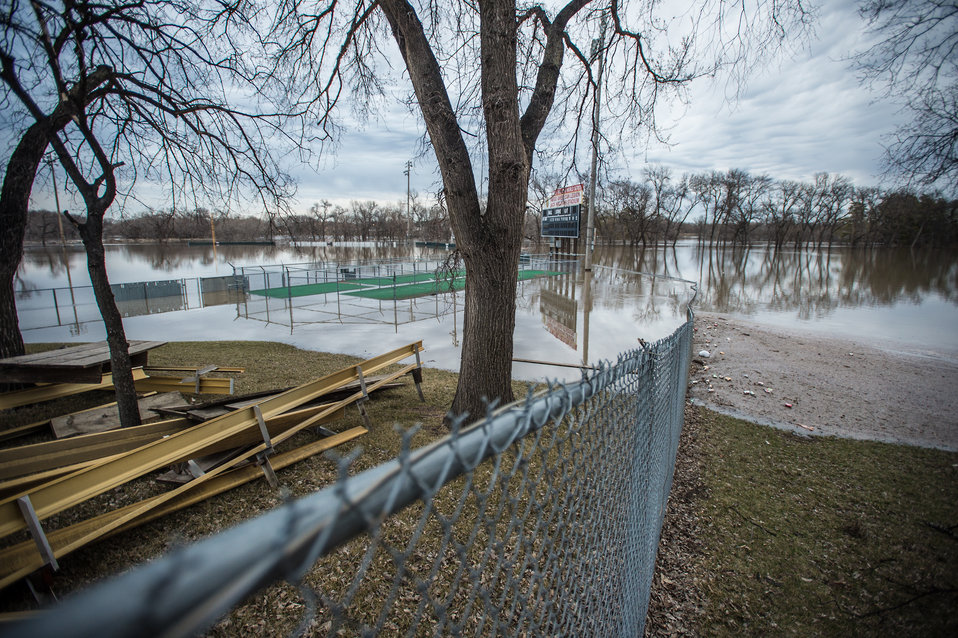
View of Jack Williams Stadium facility in Mickelson Field, with Red River flood waters, at 11th Ave. N. and Elm St. in Fargo, N.D. on Monday, Apr. 29, 2013. To learn about the Red River Basin Initiative, see www.mn.nrcs.usda.gov/news/features13/RRBI.html.